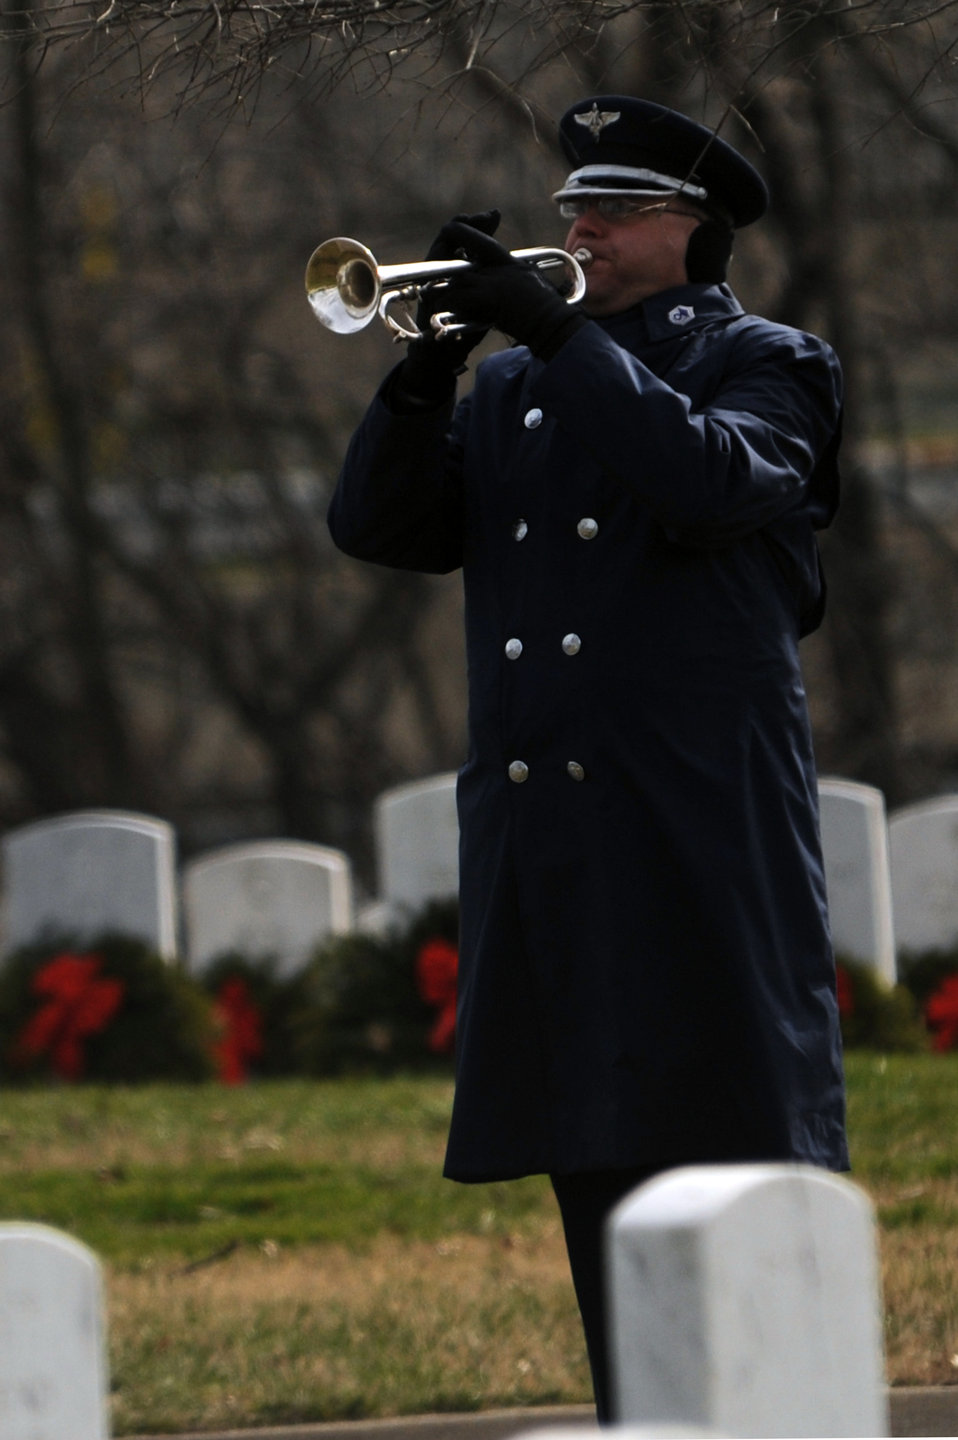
Retired Lt. Col. Luke Weathers Jr. funeral

A U.S. Air Force Band bugler plays taps during a burial ceremony for retired Lt. Col. Luke Weathers Jr. Jan. 20, 2012, at Arlington National Cemetery in Virginia. Weathers was an original Tuskegee Airman and pilot with the 302nd Fighter Squadron.